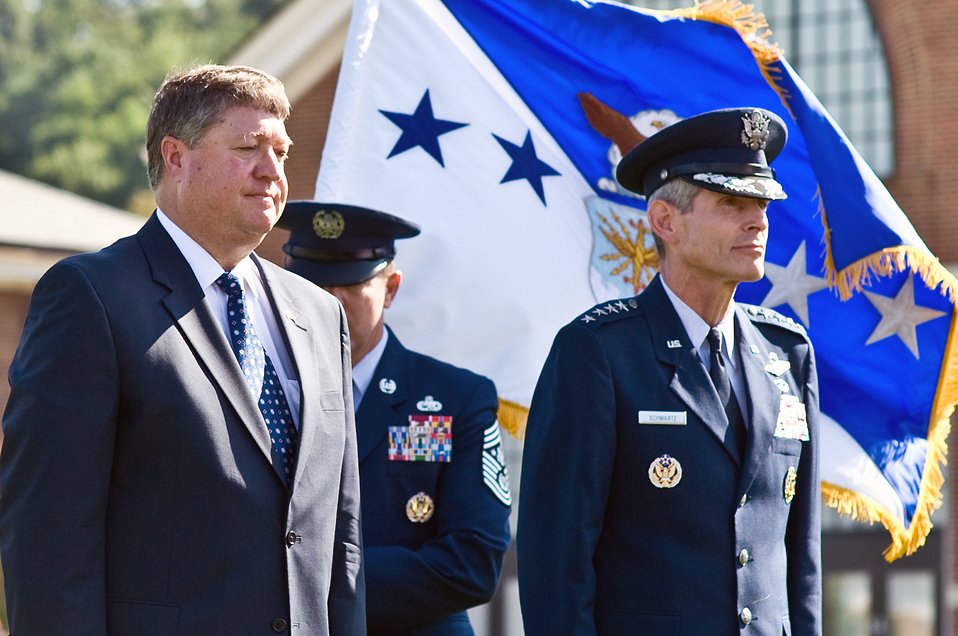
Welcoming ceremony

Acting Secretary of the Air Force Michael B. Donley prepares to pass the ceremonial Air Force flag to Gen. Norton A. Schwartz during a welcoming ceremony Aug. 12 at Bolling Air Force Base, D.C., in honor of General Schwartz. The general is the 19th Air Force chief of staff.